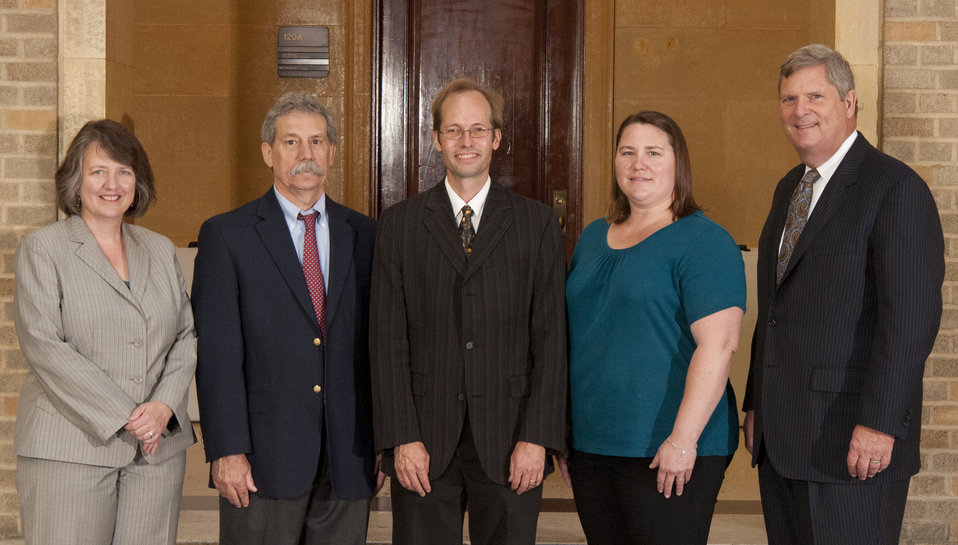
Agriculture Secretary Tom Vilsack and Deputy Agriculture Secretary Kathleen Merrigan with Honor Award Group Maize Genetic Diversity Research Group, Ithaca, NY on the patio of the U.S. Department of Agriculture in Washington, D.C. on Wednesday, Sept. 12, 2012. The Maize Genetic Diversity Research Group pioneered research on the development and application of innovative genetic and genomics-based tools to exploit genetic diversity in corn to improve corn yield in the U.S. and developing countries.